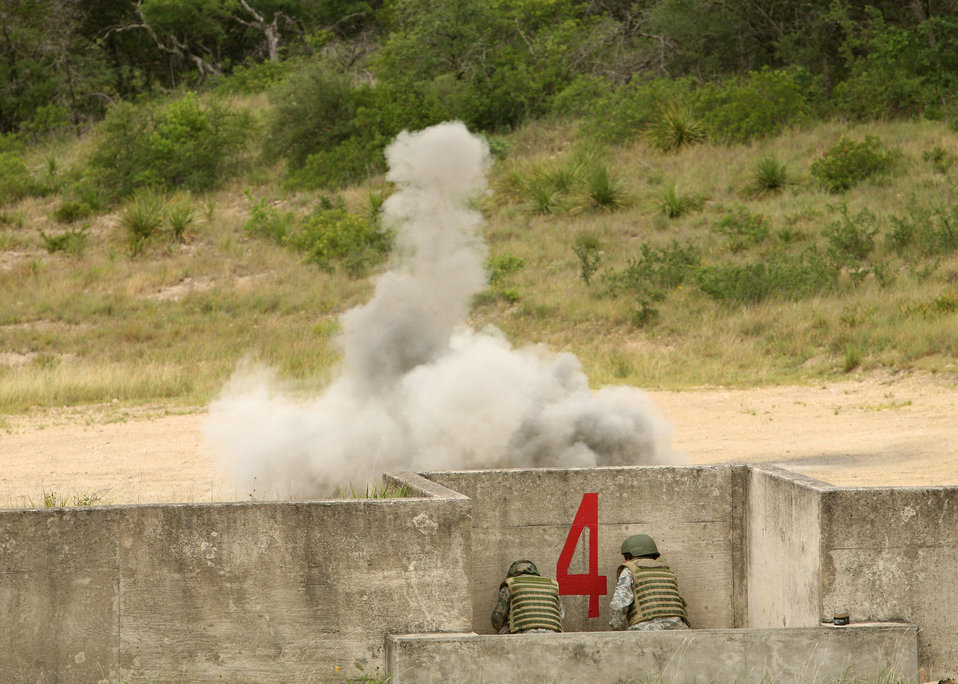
Training with a bang!

A student with the Security Forces Basic Officers' Course (left) and an instructor with the 343rd Training Squadron take cover after the student throws a live grenade June 18 at Camp Bullis, Texas. The students also detonated claymore mines during training.